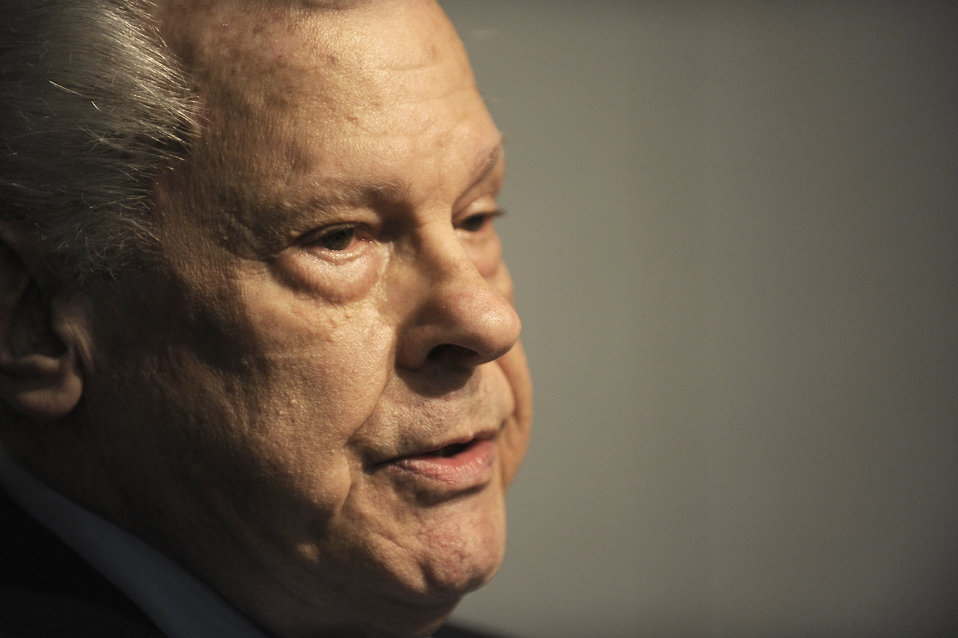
AF Review Boards Agency director retires

Joe Lineberger pauses for a moment to reflect during his retirement ceremony Jan. 31, 2012, at Joint Base Andrews, Md. Lineberger retired as the longest-serving director of the Air Force Review Boards Agency after more than 31 years in that position and more than 58 years total in federal service.